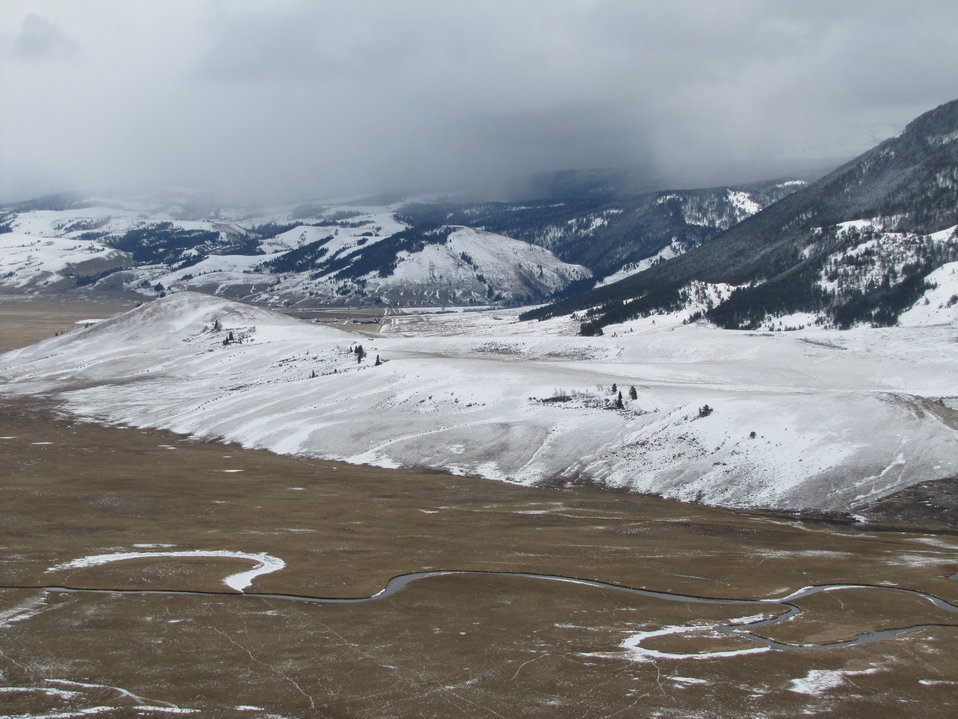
Expansive View of Miller Butte

Much of Miller Butte can be seen from this vantage point on East Gros Ventre Butte, overlooking the National Elk Refuge and the Flat Creek marsh area.